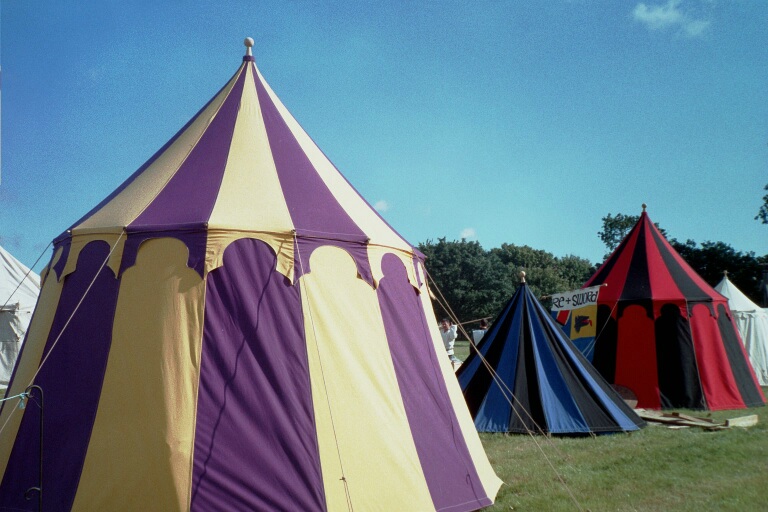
Reenactment of the siege of Caerlaverock Castle, Scotland